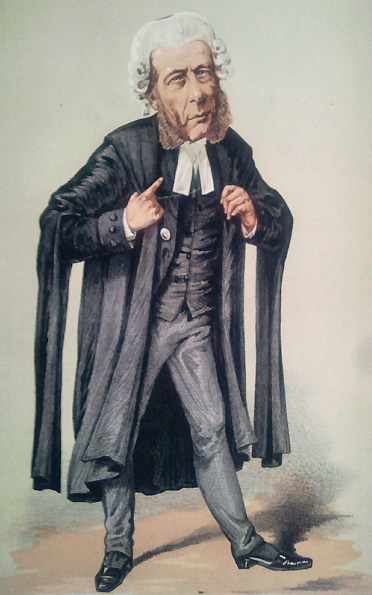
Caricature of William Ballantine. Caption reads 'He resisted the temptation to cross-examine a Prince of the blood'.